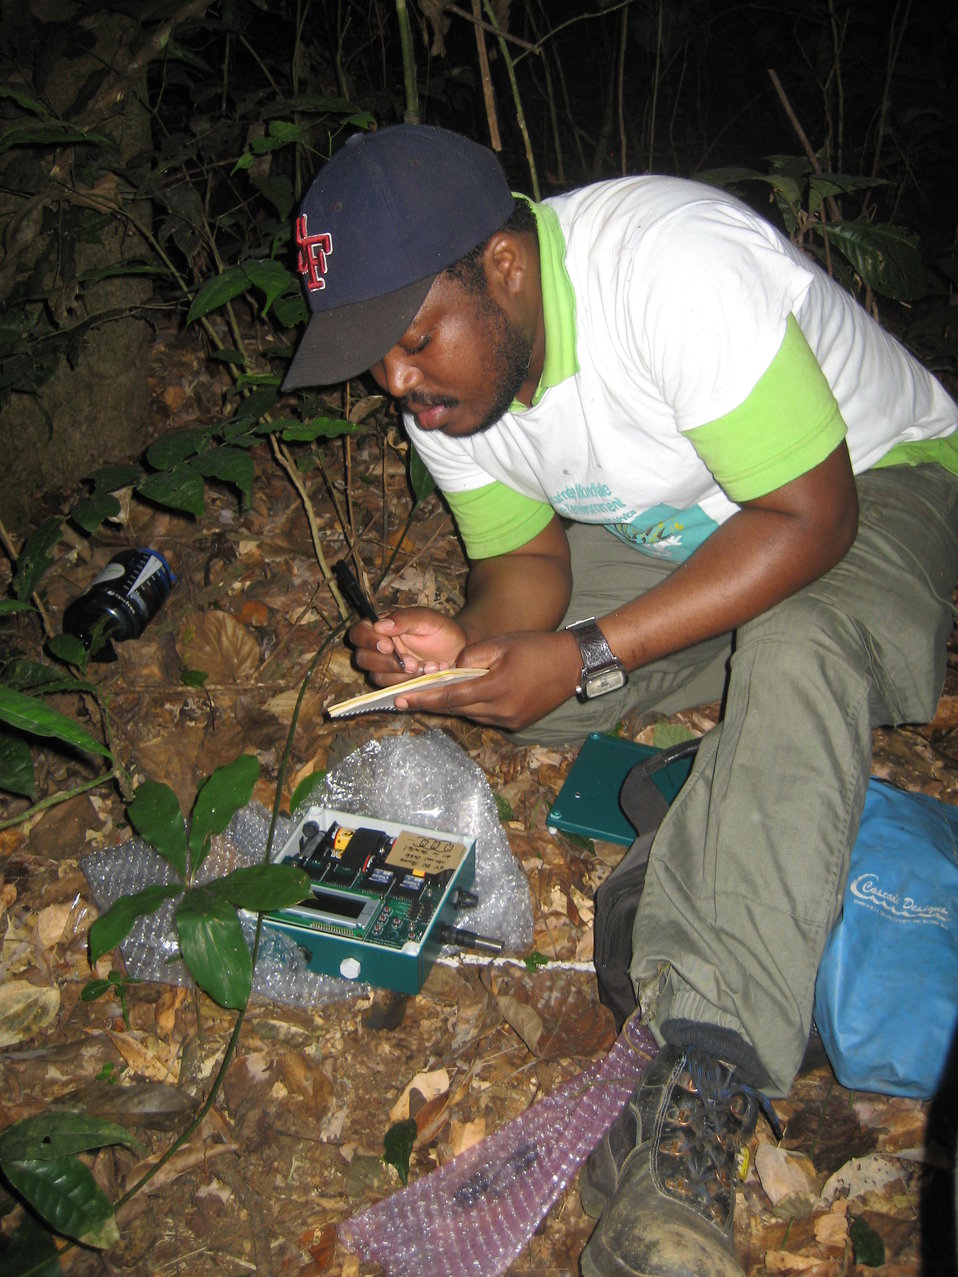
Elephant acoustics

A Gabonese graduate student, Ghislaine, is working with the Elephant Listening Project of Cornell University to record elephant vocalizations and to detect and respond to gunshots in the forest.